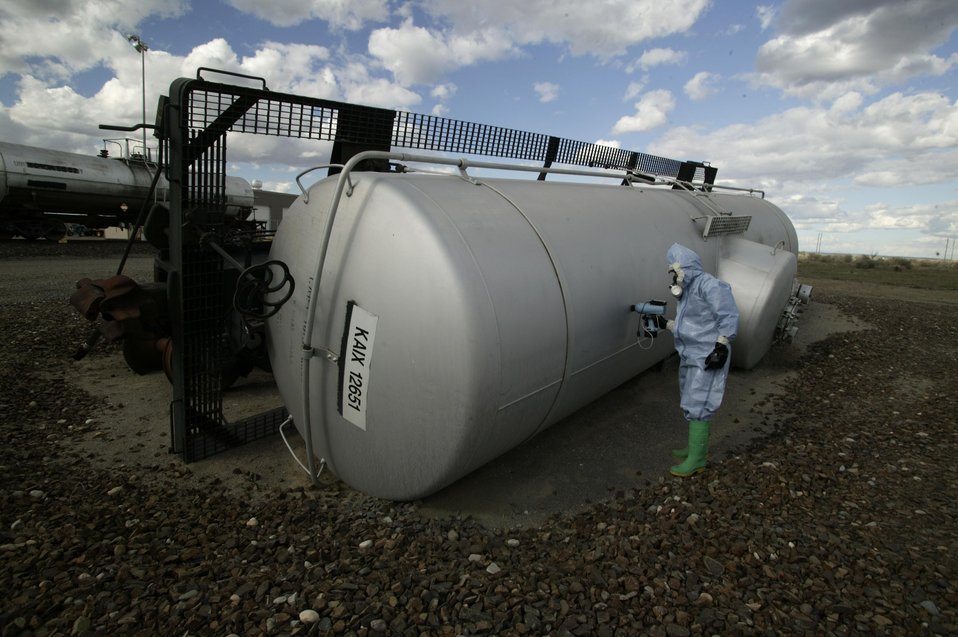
ACOUSTIC INSPECTION DEVICE BEING USED TO INSPECT CONTAINER AT THE HAZARDOUS MATERIALS MANAGEMENT AND EMERGENCY TRAINING CENTER (HAMMER).

THE ACOUSTIC INSPECTION DEVICE (AID) IS A PORTABLE, HANDHELD DEVICE THAT EXAMINES AND INSPECTS CONTAINERS NON-INVASIVELY. RESEACHERS AT PACIFIC NORTHWEST NATIONAL LABORATORY ARE DEVELOPING AID TO ASSIST THE LAW ENFORCEMENT COMMUNITY, THE MILITARY, AND INTERNATIONAL TREATY CONVENTIONS IN THEIR EFFORTS TO SUPPORT HOMELAND DEFENSE, DETER ILLICIT DRUG MANUFACTURING, STOP SMUGGLING, COLLECT TAXES AND TARIFFS, EFFECTIVELY MAINTAIN INVENTORIES AND VERIFY TREATY COMPLIANCE.